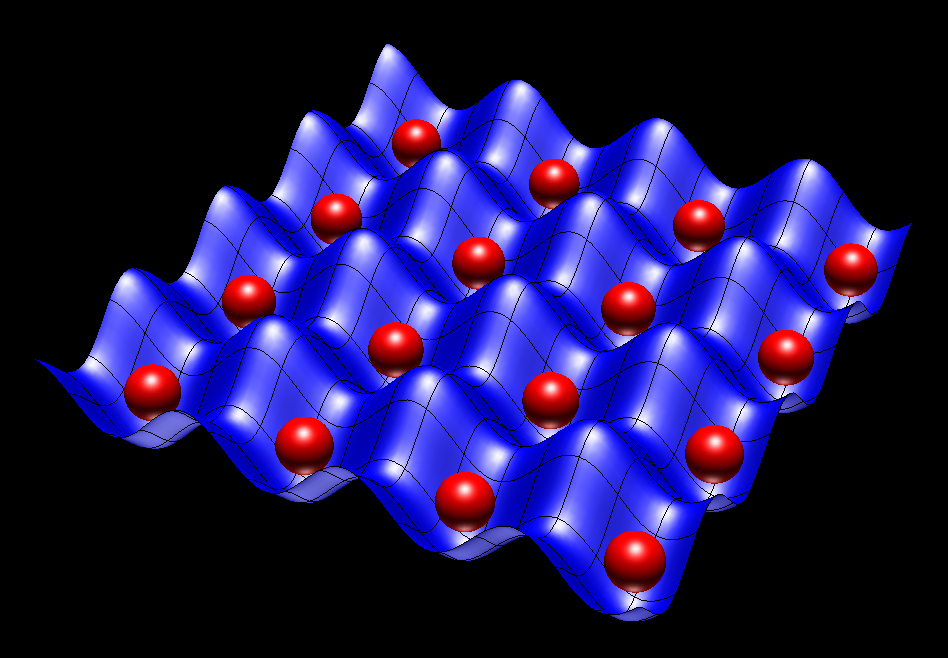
Qubits

Optical lattices use lasers to separate rubidium atoms (red) for use as information bits in neutral-atom quantum processors -- prototype devices which designers are trying to develop into full-fledged quantum computers. NIST scientists have managed to isolate and control pairs of the rubidium atoms with polarized light, an advance that may bring quantum computing a step closer to reality.